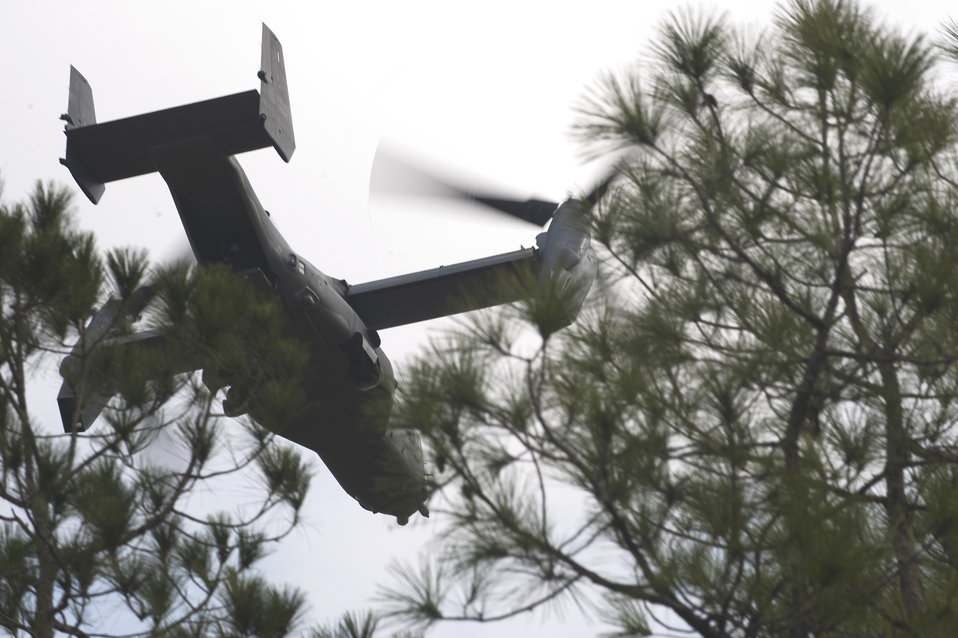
Osprey training mission

Pilots take off in a CV-22 Osprey during a training mission Feb. 1, 2011, at Hurlburt Field, Fla.